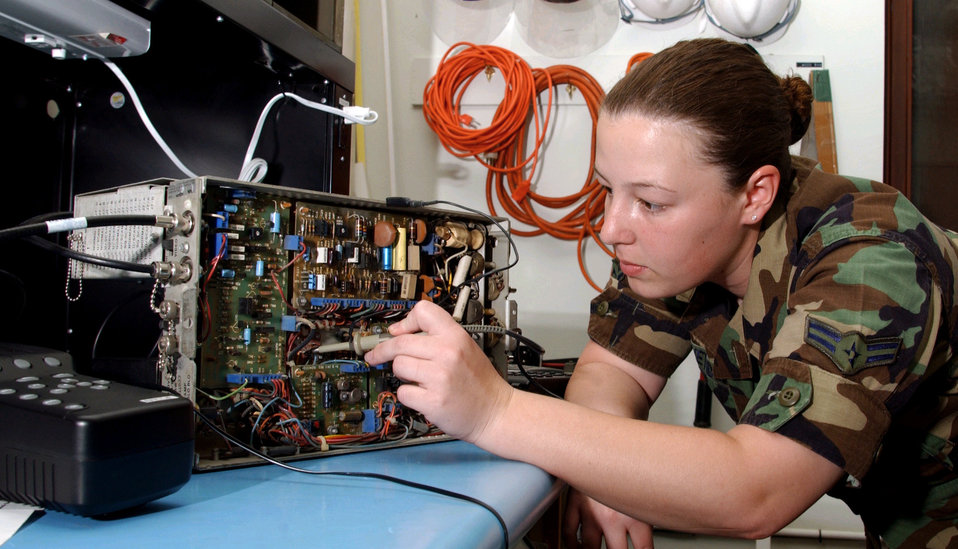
Mrs. fix it

INCIRLIK AIR BASE, Turkey -- Airman 1st Class Jennifer Benevides test's the voltage on a voice communication system here. Airman Benevides is a visual imagery and intrusion detection systems technician with the 39th Communications Squadron.